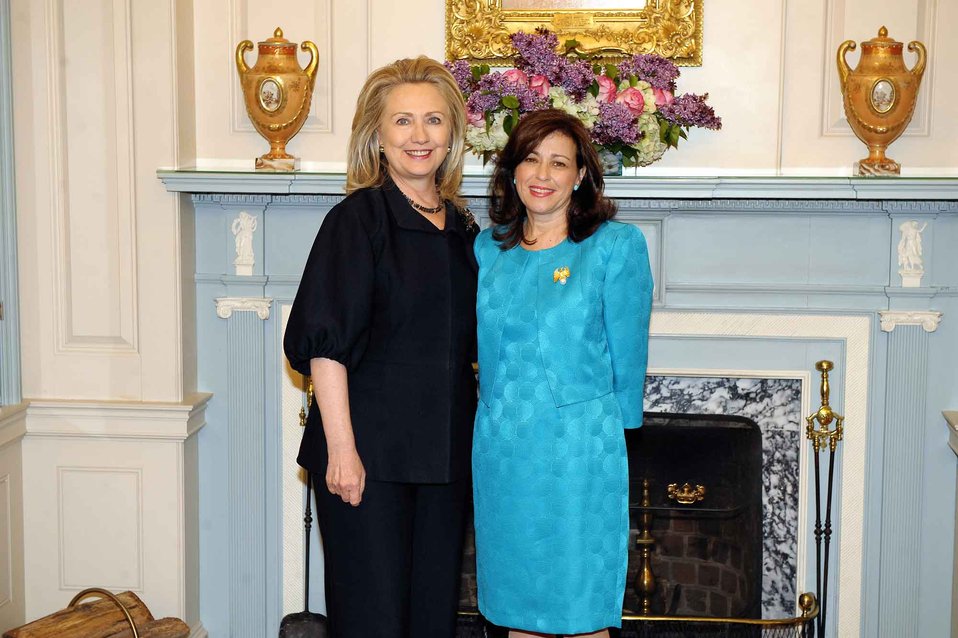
Secretary Clinton With Under Secretary Sonenshine

U.S. Secretary of State Hillary Rodham Clinton and Under Secretary of State for Public Diplomacy and Public Affairs Tara Sonenshine pose for a photgraph before the Under Secretary is sworn in at the U.S. Department of State in Washington, D.C., April 24, 2012.